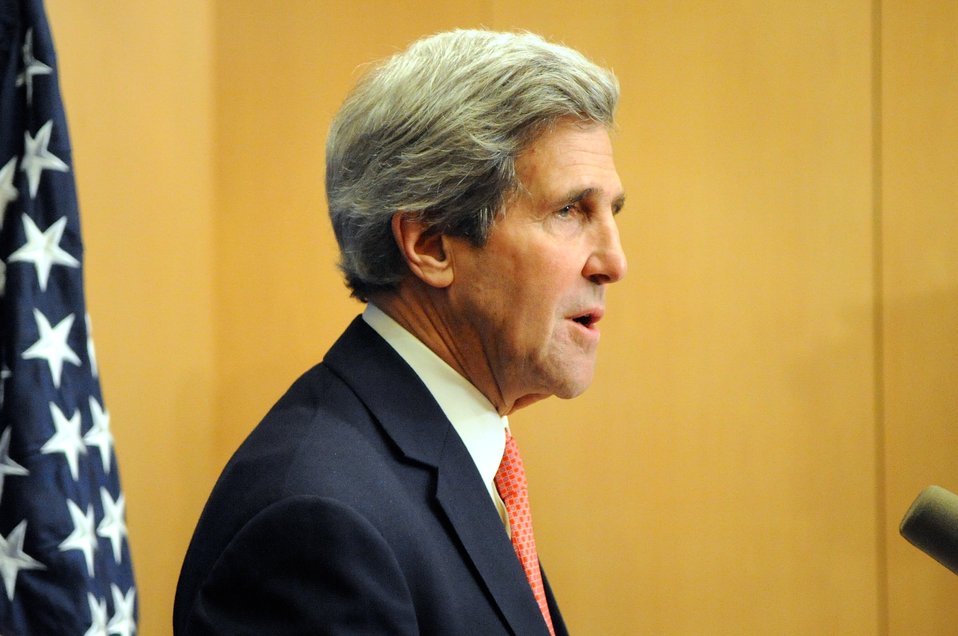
Secretary Kerry Addresses Middle East Peace, Iraq, Syria During News Conference

U.S. Secretary of State John Kerry answers questions from his traveling press crops about Middle East peace negotiations, Iraq, and Syria before departing Jerusalem and Israel for further talks in Jordan and Saudi Arabia on January 5, 2014.